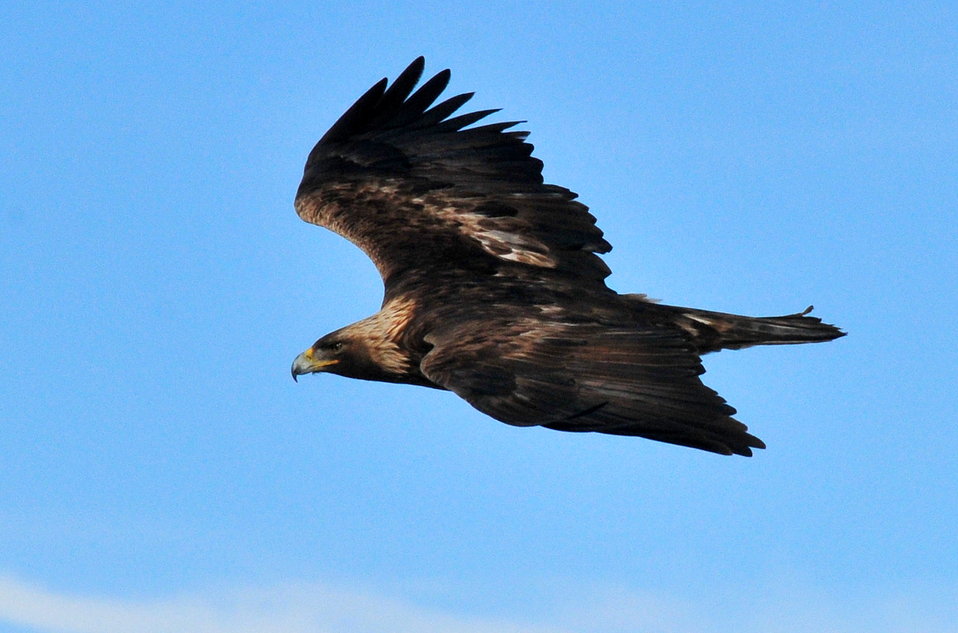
Golden Eagle Soaring

A golden eagle soars over Seedskadee NWR.